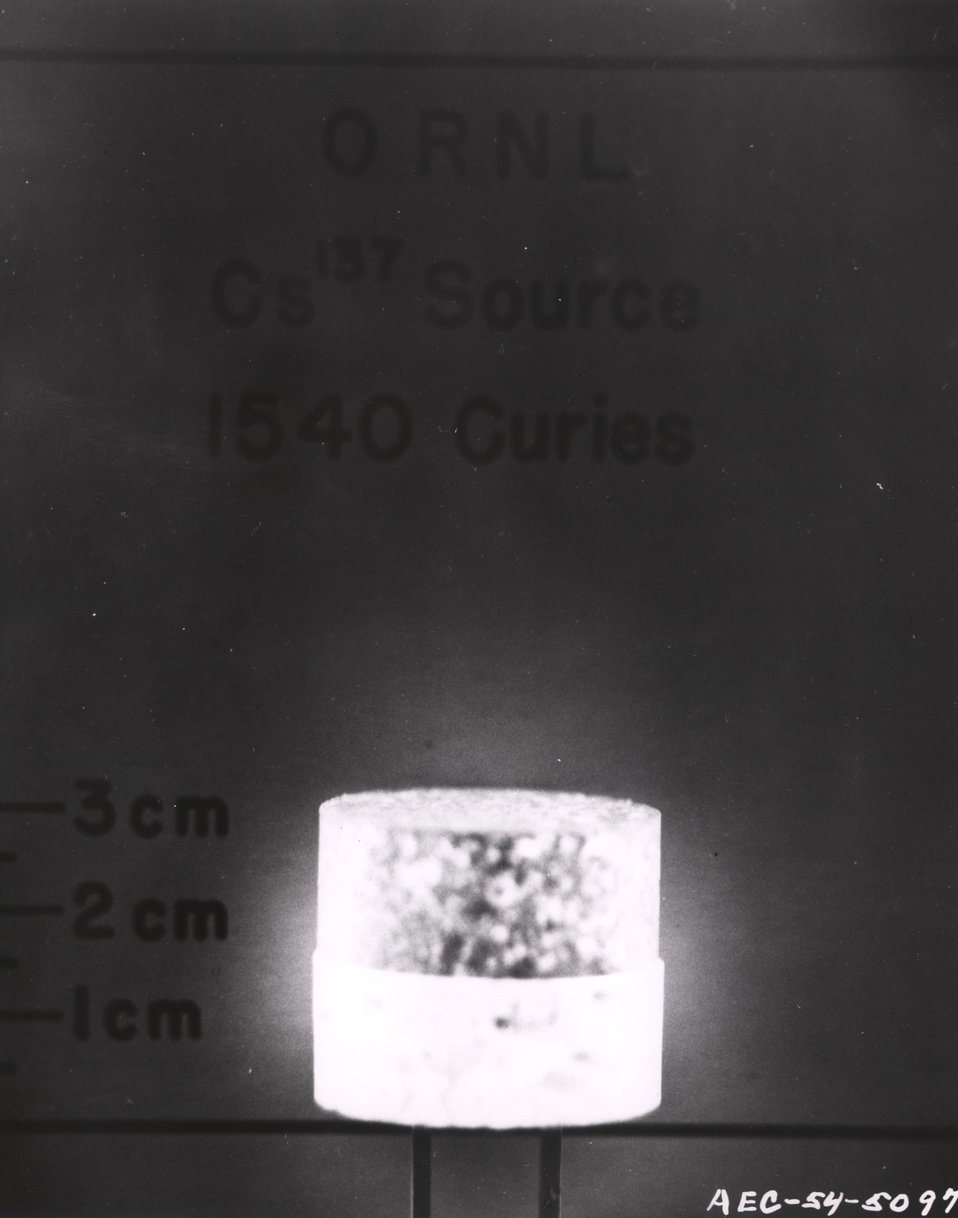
An actual photograph at the oak Ridge National Laboratory for use in cancer treatment. c. 1954